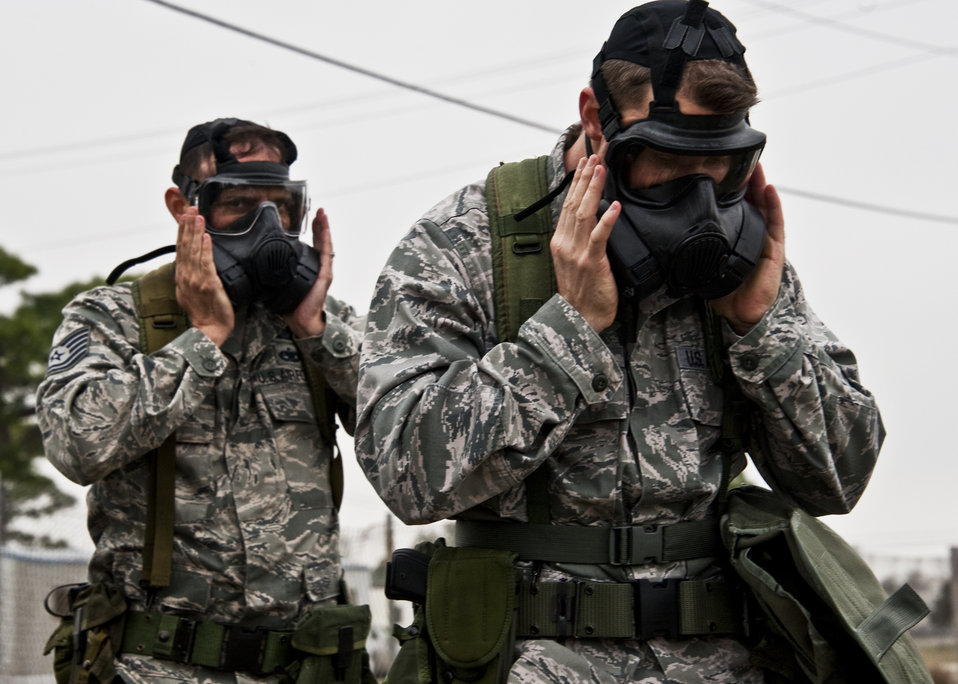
Operational readiness exercise

Airmen check to ensure their masks are properly sealed Feb. 24, 2011, during an operational readiness exercise at Eglin Air Force Base, Fla.